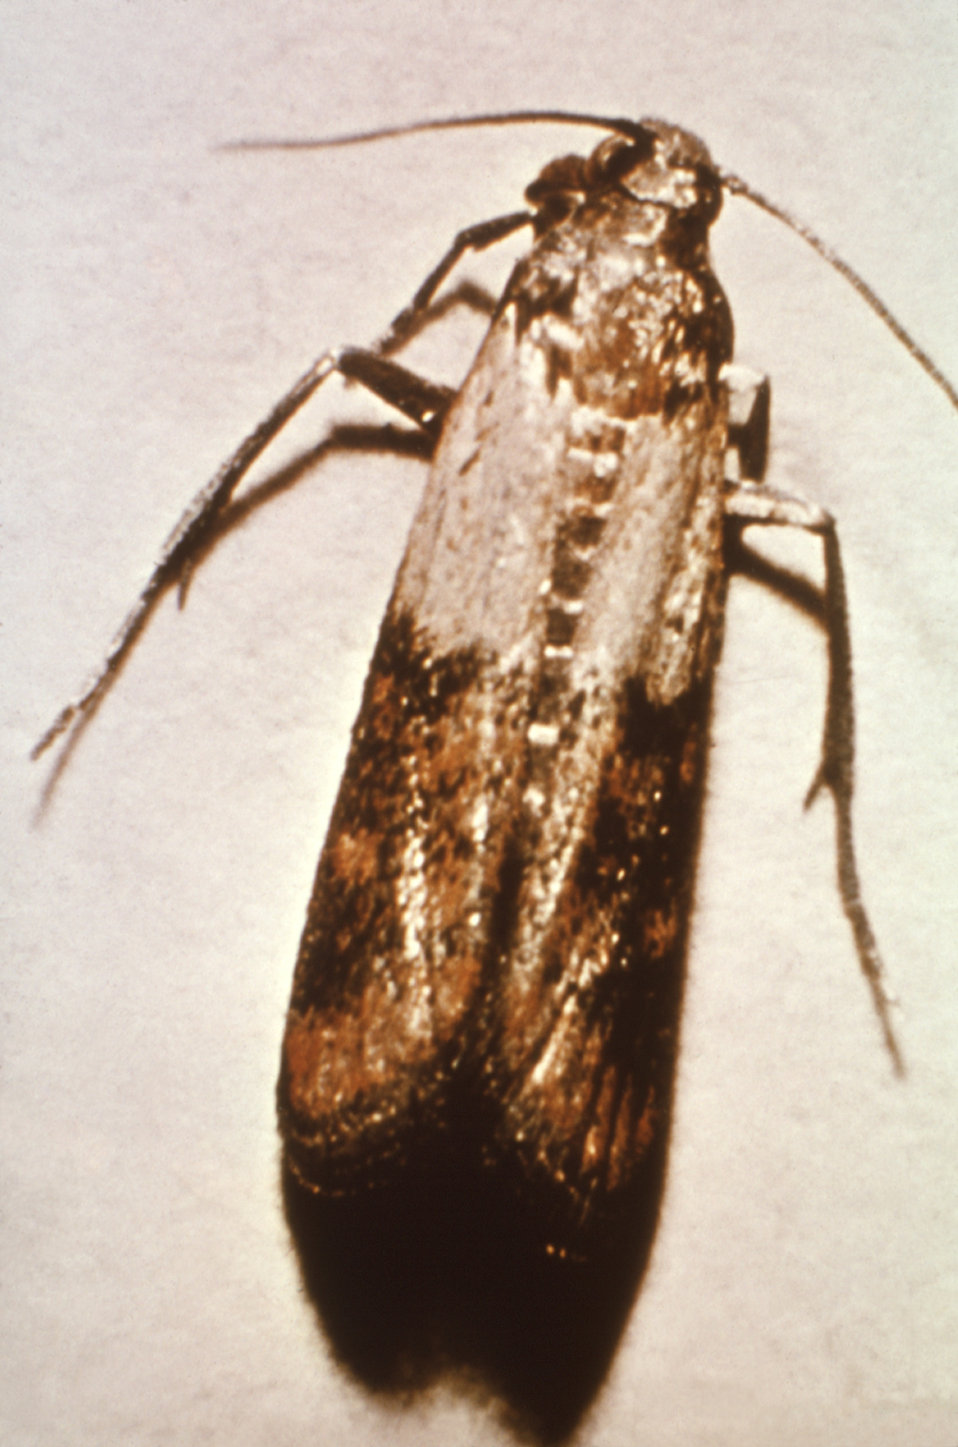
This is a dorsal view of an 'Indian meal moth', Plodia interpunctella, a stored food pest common to flour mills.